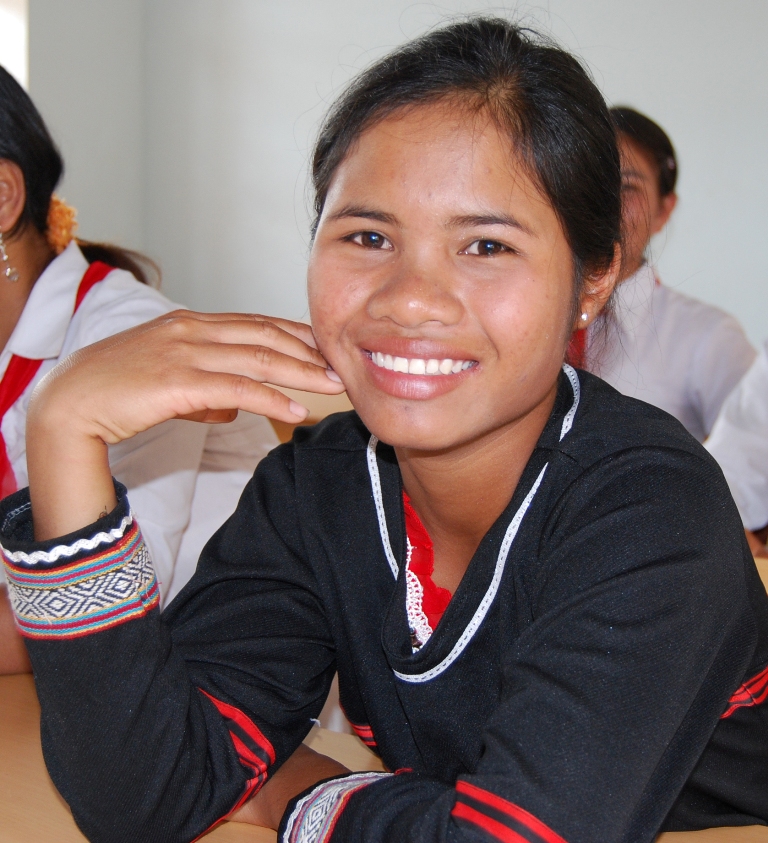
USAID supports education for ethnic minorities in rural Vietnam.

Y Nga enjoys studying at the USAID-funded Kon Ray Ethnic Minority School in Kon Tum Province.